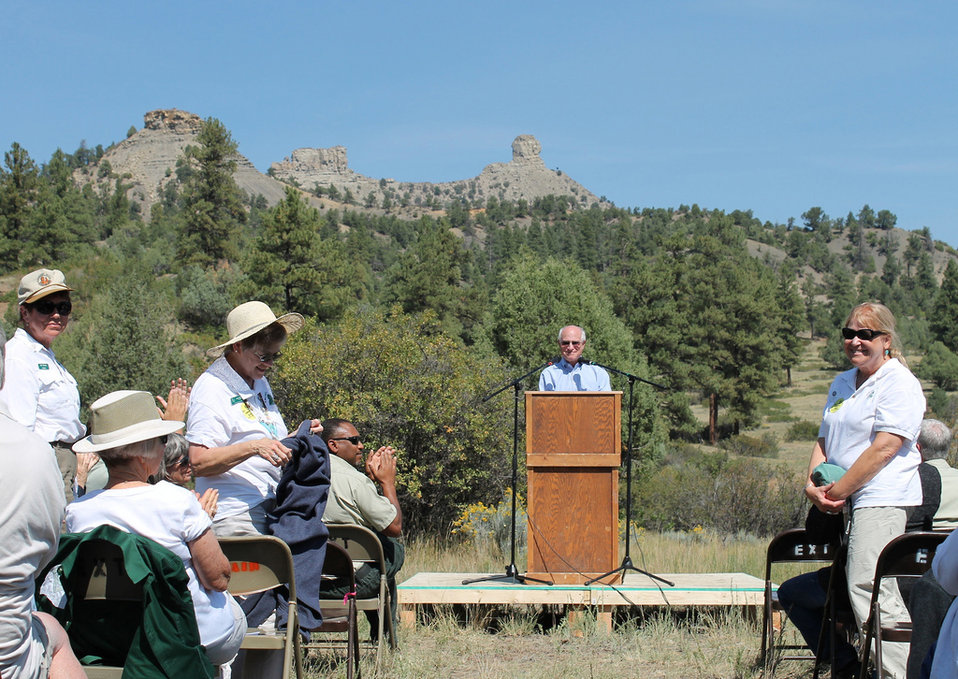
Agriculture Under Secretary for National Resource and Environment Harris Sherman speaks at the dedication of Chimney Rock as a National Monument in the San Juan National Forest in Southwest Colorado on Friday, Sept. 21, 2012. Chimney Rock is of great spiritual importance to Pueblos and other Tribes in the southwest corner of Colorado. With its twin sandstone pillars and its massive Chaco- style masonry walls perched 1,000 feet above the Piedra River Valley the monument protects a landscape important to the continuation of traditional cultural practices of the modern Puebloan Indians.